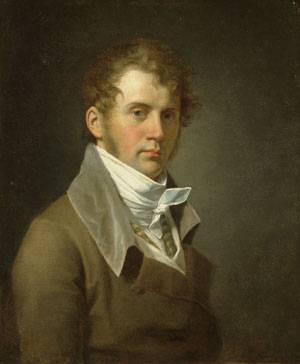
JohnVanderlynPortraitOfTheArtist1800